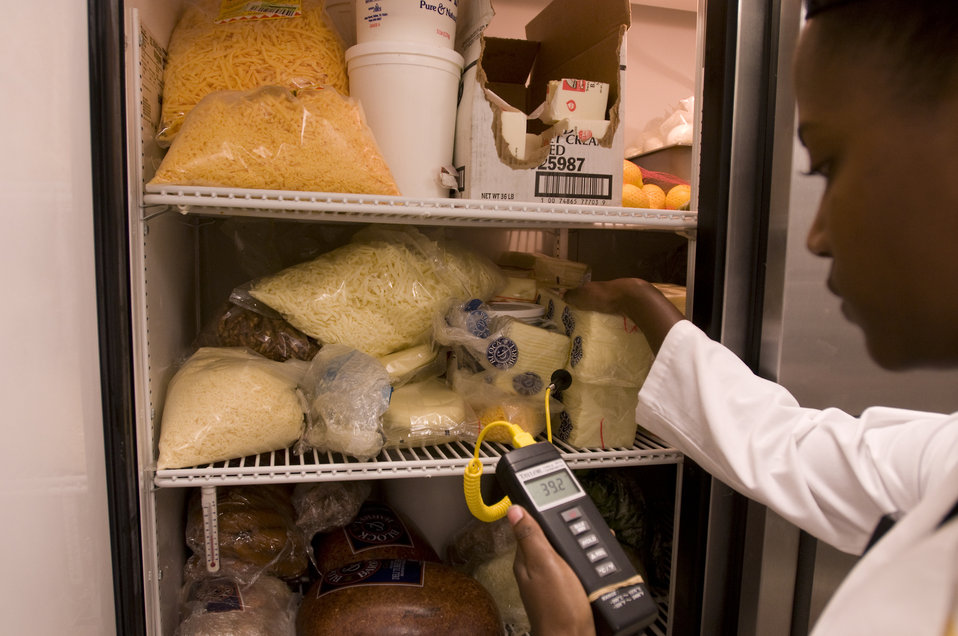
The state-appointed health inspector pictured here at right, was in the process of performing an assessment of this kitchen's sanitary condition. At this point in her inspection, she was taking thermal readings of contents within a refrigerator, using an electronic thermometer. Note that she was taking a thermal reading of a stack of processed cheese slices. At this moment, the thermometer was giving a reading of 39.2oF.